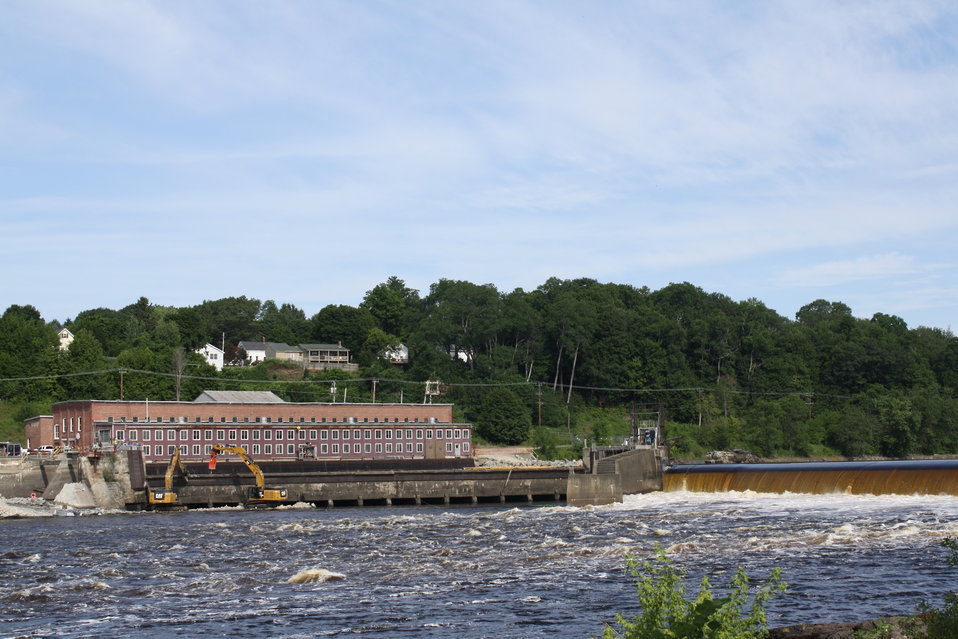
Veazie Dam Removal

The removal of Veazie Dam is expected to be completed over two years. Together with the removal of the Great Works Dam in Old Town and Bradley, Maine (removed
in the summer of 2012), the removal of Veazie will restore 9.3 miles of the lower Penobscot to its free‐flowing state.